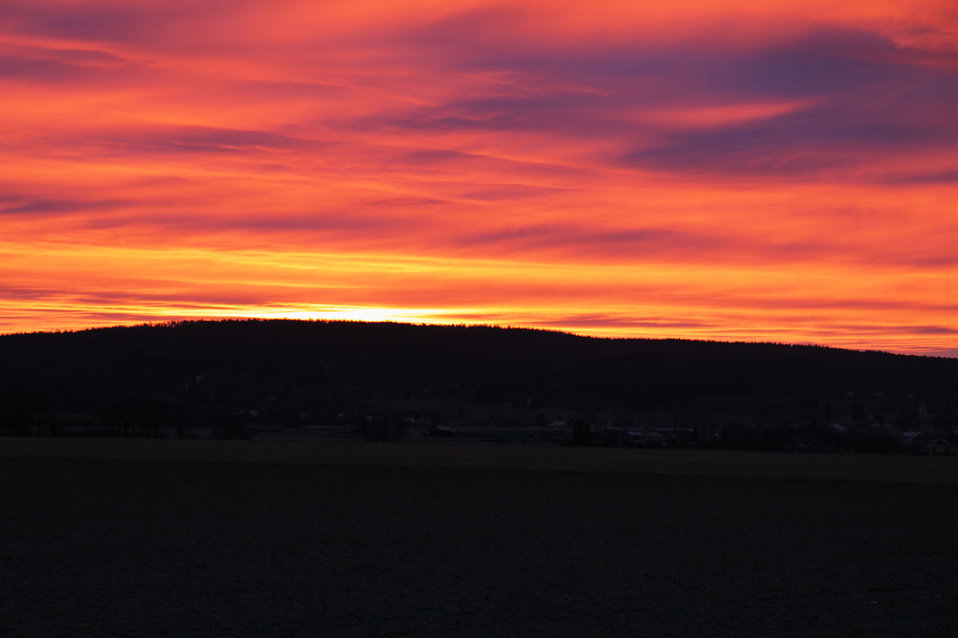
Sunrise

Early morning romantic sunrise.